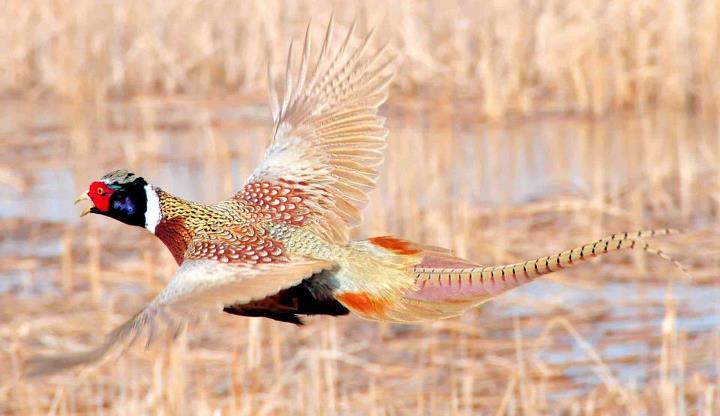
Rink-necked pheasant in flight

Sand Lake National Wildlife Refuge
March 2012
Tom Koerner/USFWS

Check out this amazing shot of a ring-necked pheasant in flight at South Dakota's Sand Lake National Wildlife Refuge.